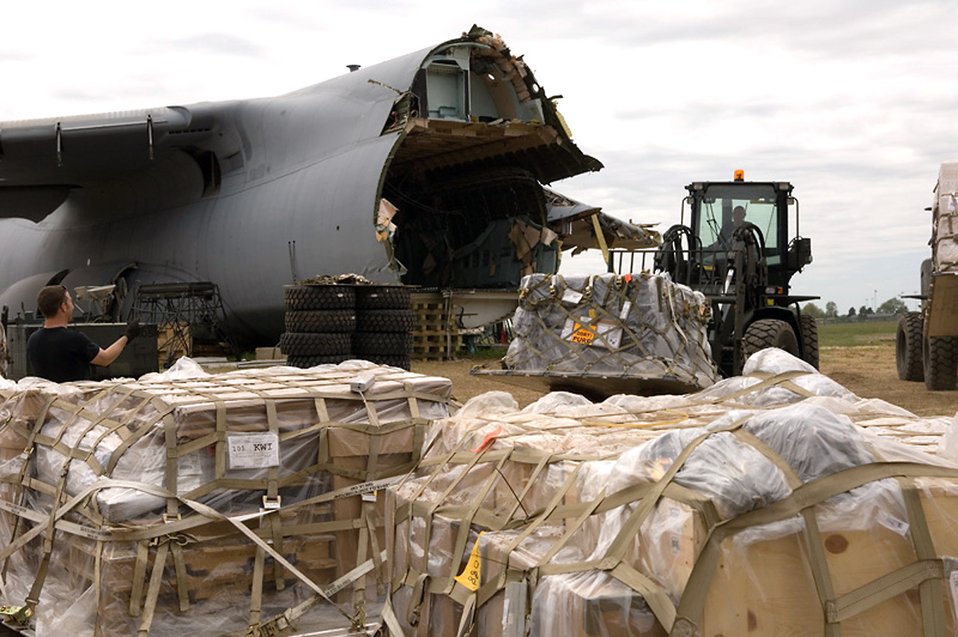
C-5 recovery efforts continue at Dover

The recovery team salvages cargo on Monday, May 1, 2006, from the C-5 Galaxy that crashed at Dover Air Force Base, Del., on April 3. Any damaged cargo will go back to the shipping activity to be either repaired or replaced. Undamaged cargo was sent on to its final destination.